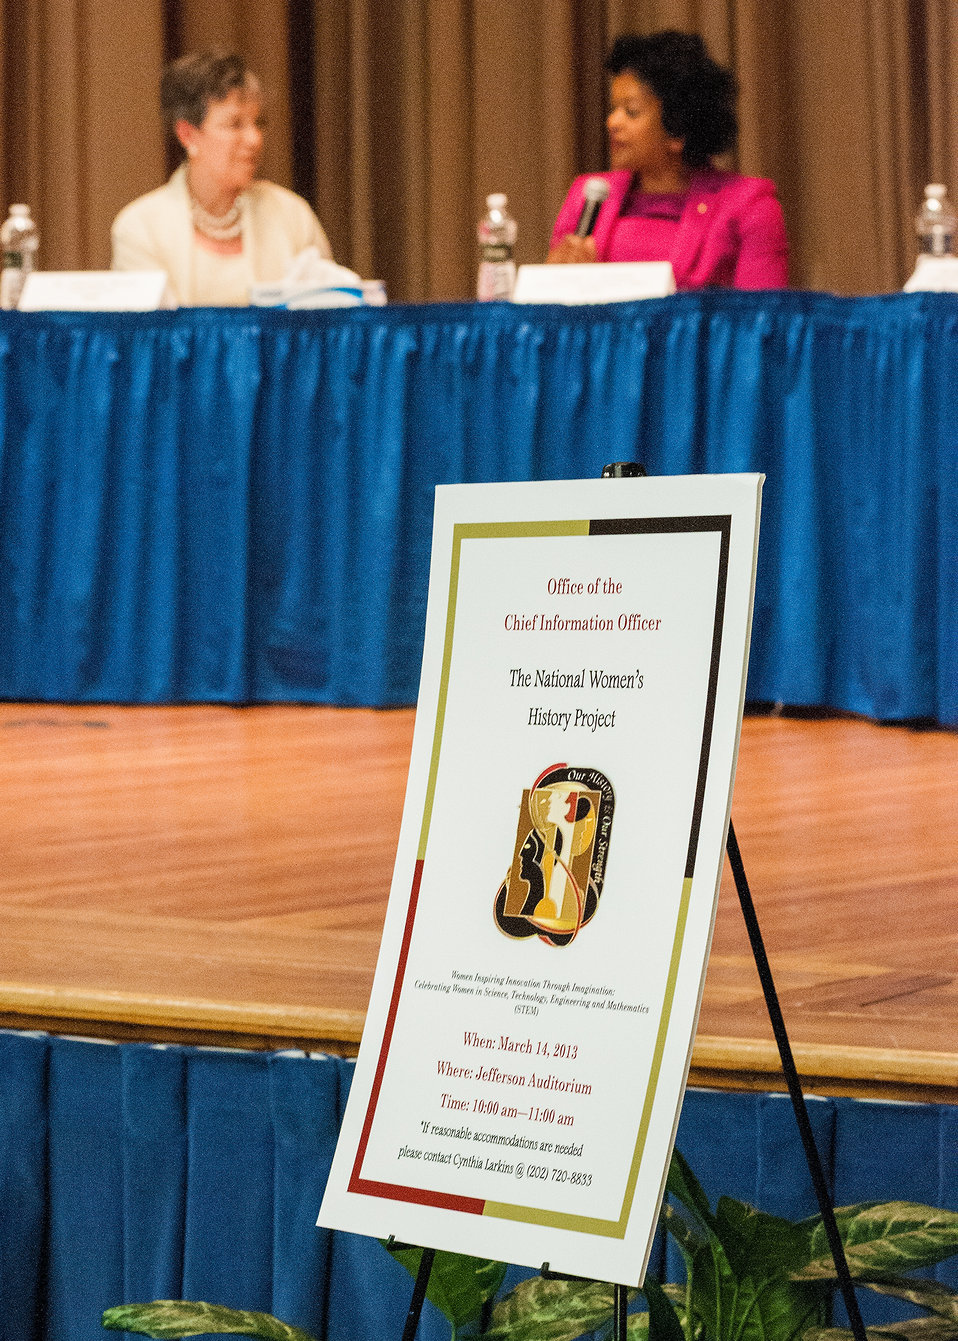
The U.S. Department of Agriculture (USDA) Office of the Chief Information Officer (OCIO) celebrated National Women’s History Month at the USDA Jefferson Auditorium in Washington, D.C. on Thursday, Mar. 14, 2013. USDA OCIO is celebrating Women’s National History Month to commemorate women’s struggles, celebrate centuries of progress and reaffirm women’s steadfast commitment to the rights, security and dignity of women in America and around the world. The theme of this year’s celebration was, “Recognizing American Women’s Outstanding Contributions to the Field of Science, Technology, Engineering and Mathematics,” commonly referred to as STEM.